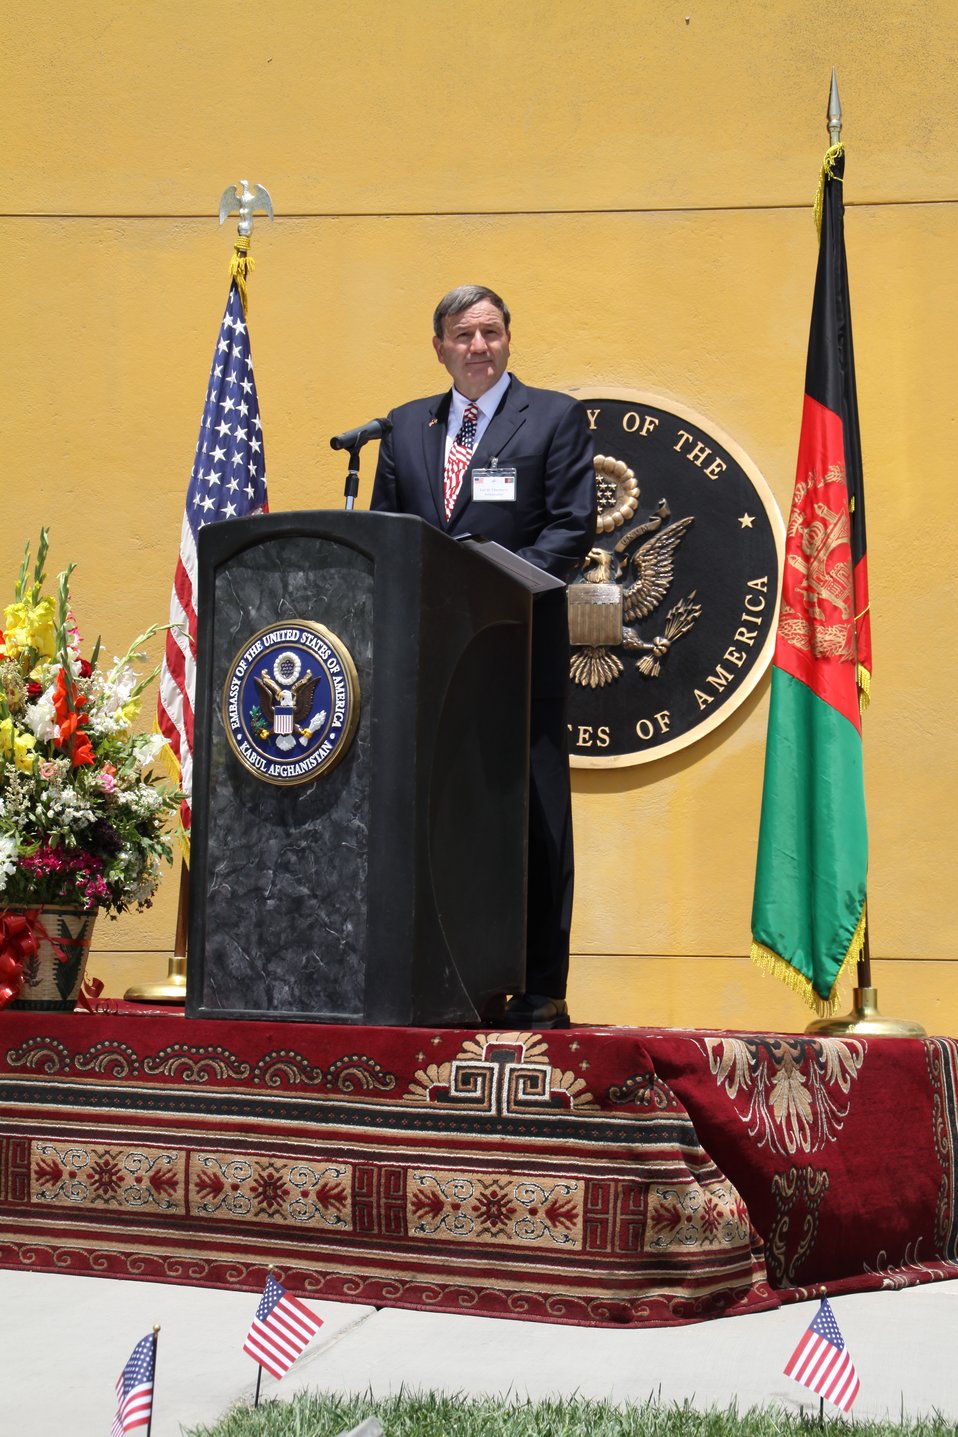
Kabul Official July 4th Celebration